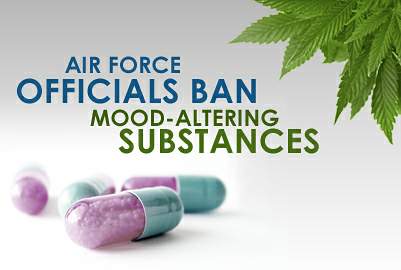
Air Force officials ban mood-altering substances